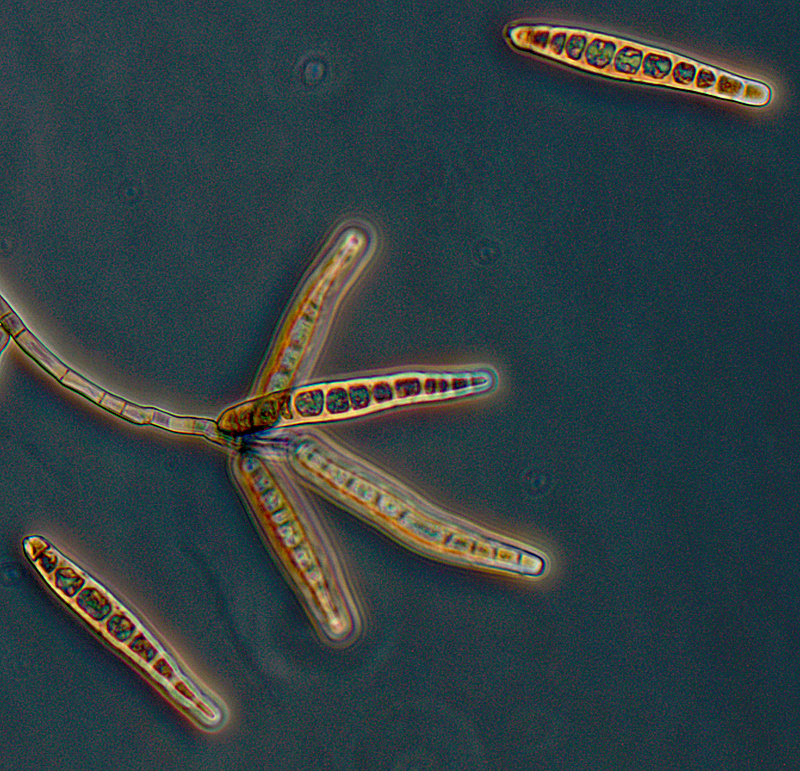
This photomicrograph reveals some of the ultrastructural morphology exhibited by the fungal organism, Exserohilum rostratum. In this particular view you'll note the ellipsoid-shaped conidia sprouting from atop a filamentous hypha. The conidial cells are contained within sacs instead of being sequestered in septate confined spaces, which is known as being distoseptate, and the proximal end of each conidia, i.e., the end that is attached to the conidiophore, gives rise to a protuberant and truncated hilum. For a another, wider view of these structures see PHIL 15143.